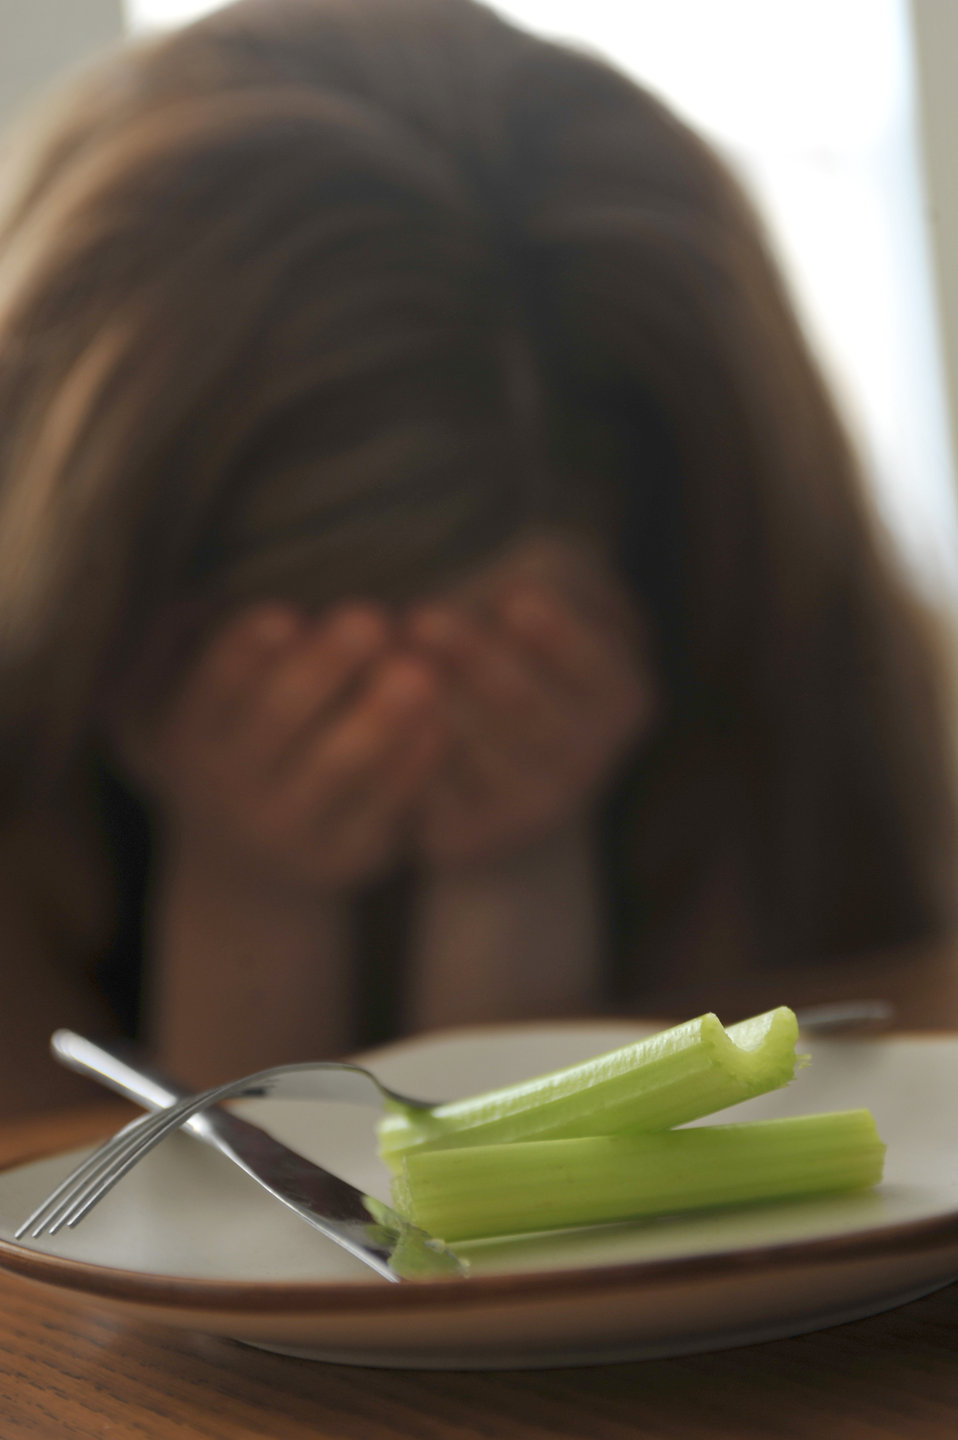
Perfection can be deadly

February is National Eating Disorder Awareness month. If you are struggling with an eating disorder, call your base mental health clinic. You're not alone.